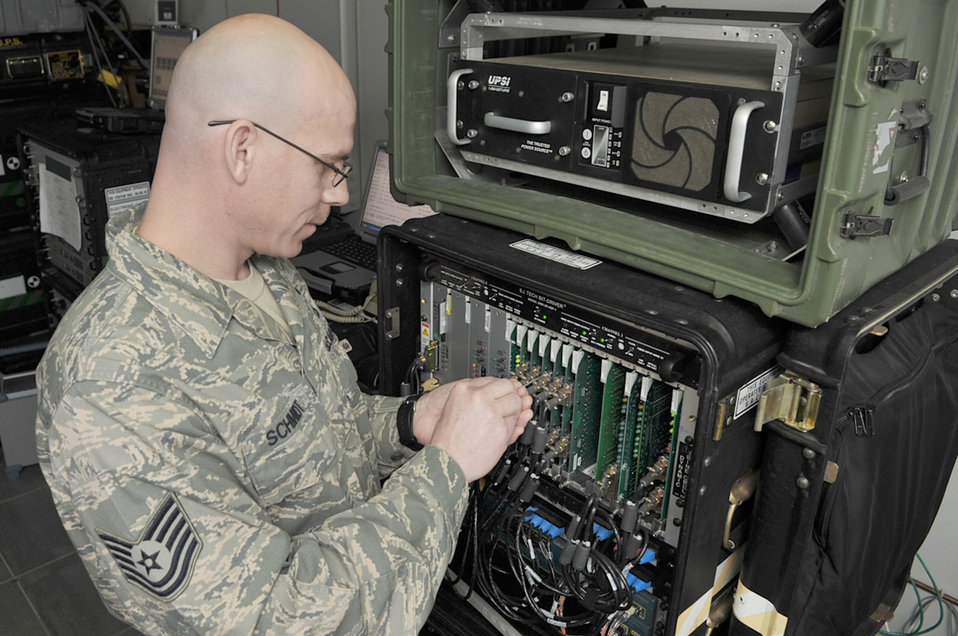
Europe's communication needs keep 1st CBCS Airmen busy

Tech. Sgt. Dennis Schmidt makes adjustments to a basic access module used to manage defense system network lines, Feb. 9, 2010, at the Krtsanisi National Training Center, Georgia. Sergeant Schmidt is a transmission system technician with the 1st Combat Communications Squadron.